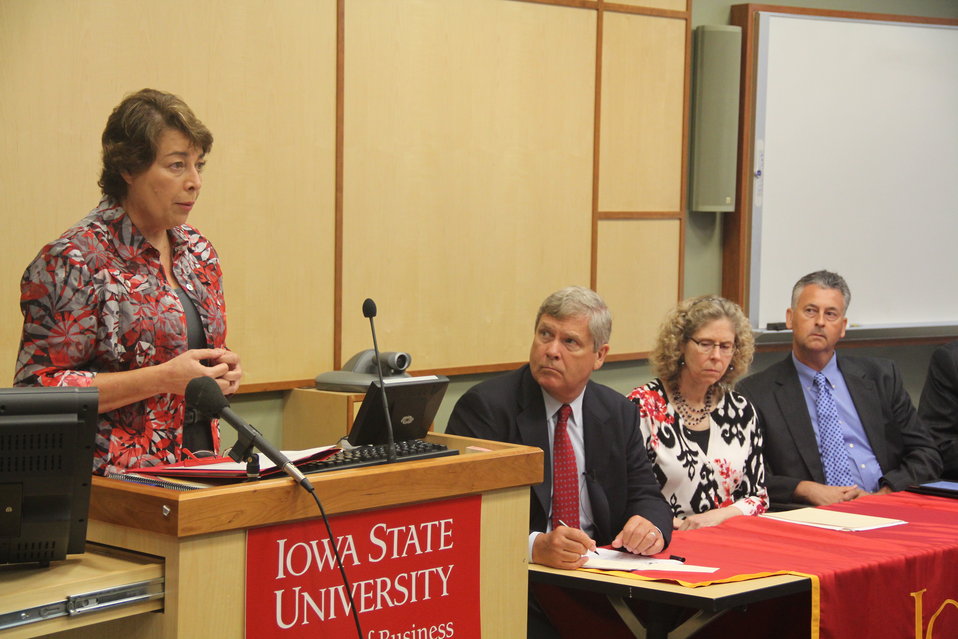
DuPont Pioneer corporate counsel Helen Adams speaks at a roundtable discussion on immigration reform at Iowa State University in Des Moines, IA on Friday, Aug. 30, 2013. (L to R Agriculture Secretary Tom Vilsack, Iowa State University College of Agriculture and Life Sciences Dean Dr. Wendy Wintersteen, and Greater Des Moines Partnership Chief Executive Officer Jay Byers)